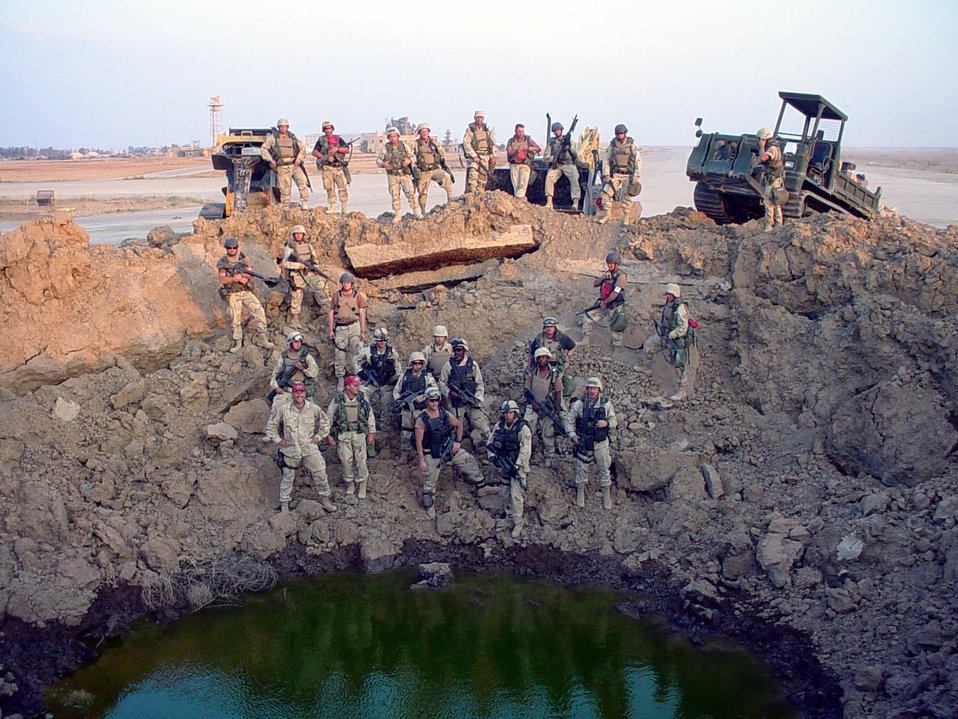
Airborne Red Horse

OPERATION IRAQI FREEDOM -- The Airborne Red Horse Team poses in a crater they are going to repair on a runway in central Iraq. This crater is 135 feet wide, 40 feet deep and filled with 15 feet of water. ARH teams are trained to rapidly deploy into barren locations, assess airfield capabilities, prepare helicopter or aircraft landing areas, clear obstacles, install emergency airfield lighting systems and repair airfield damage.